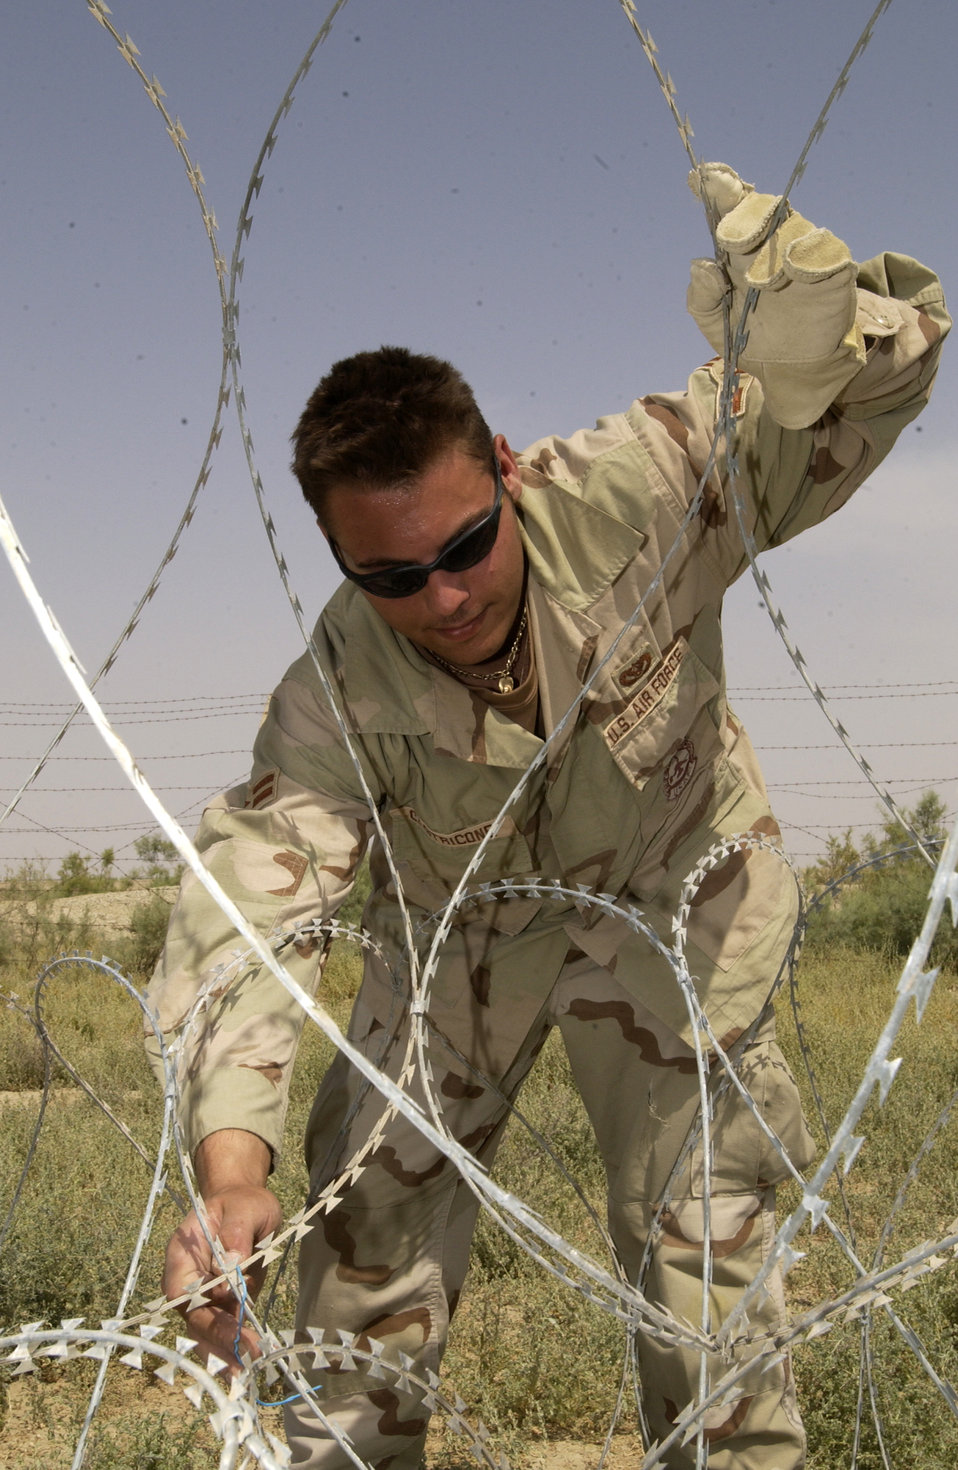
Through the wire

TALLIL AIR BASE, Iraq -- Airman 1st Class Alfred Castricone assists in securing the base's perimeter by helping run concertina wire here May 27. Airman Castricone is a firefighter with the 407th Expeditionary Civil Engineer Squadron.